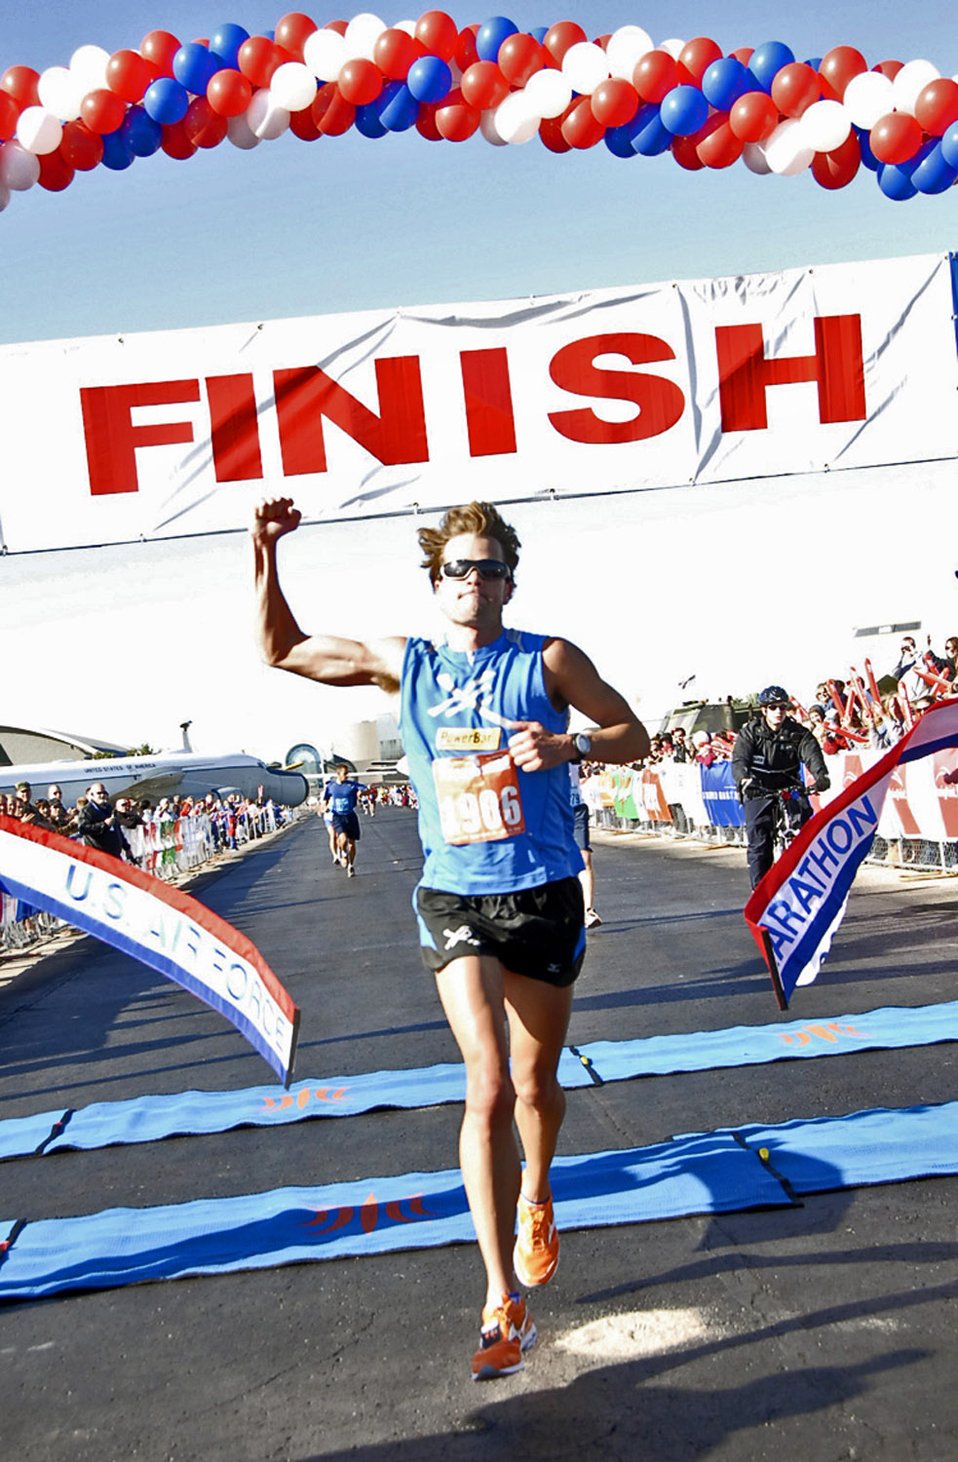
U.S. Air Force Marathon official results announced

Josh Cox of Mammoth Lakes, Calif., takes the first place finish in the U.S. Air Force Marathon Sept. 15 at Wright-Patterson Air Force Base, Ohio. He set a new record for the marathon with a time of 2:20:57.